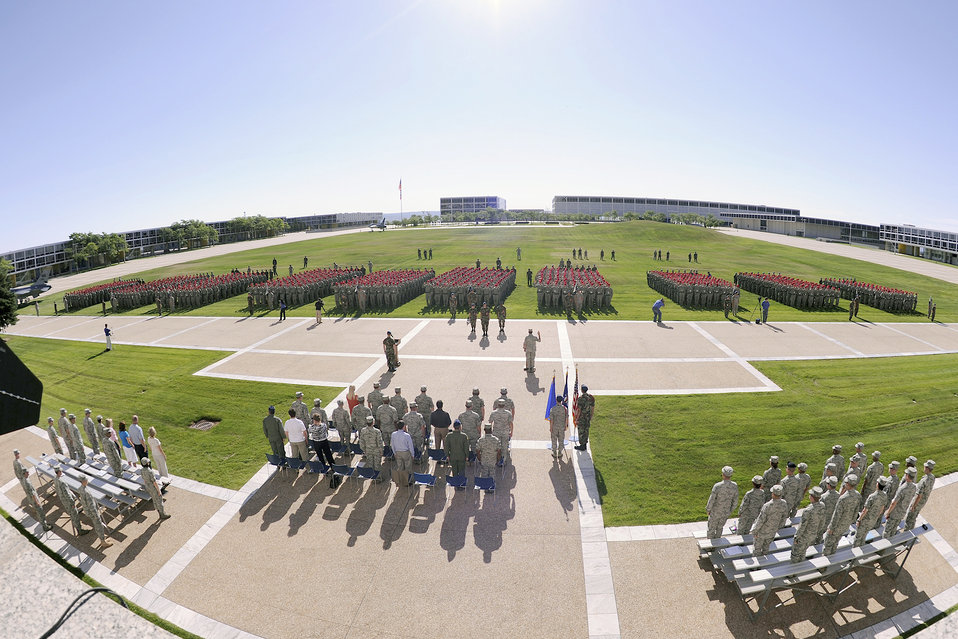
Air Force Academy's Class of 2014

Brig. Gen Sam Cox (center) administers the oath of allegiance during a swearing-in ceremony June 25, 2010, at the U.S. Air Force Academy, in Colorado Springs, Colo. General Cox is the commandant of cadets who supervises cadet life activities.